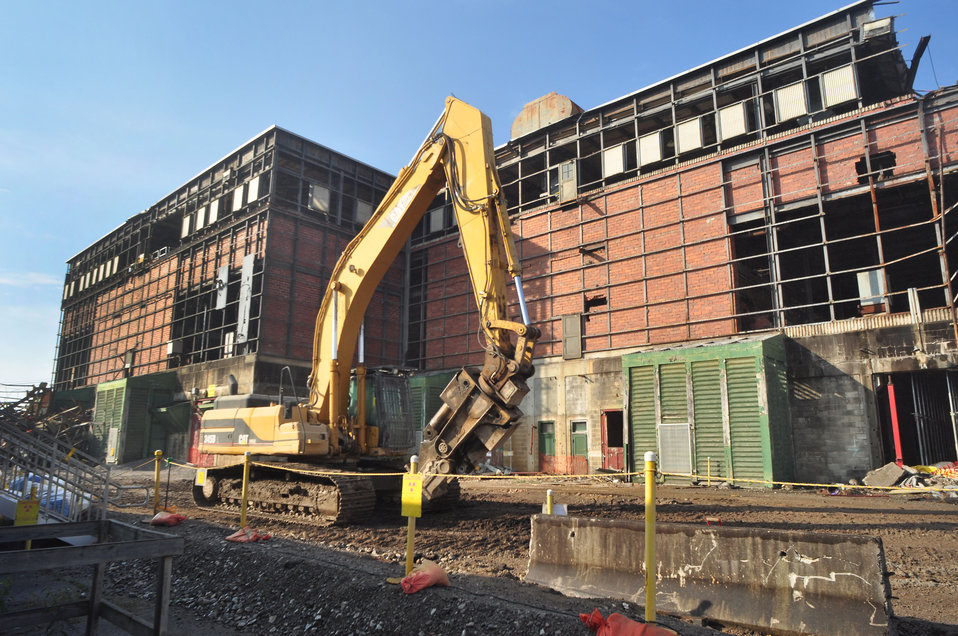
D and D Clean Up Work at K-25 Oak Ridge 2013

DSC 0085 13-124-85 DOE photo Lynn Freeny 10-30-2013 Oak Ridge Tennessee